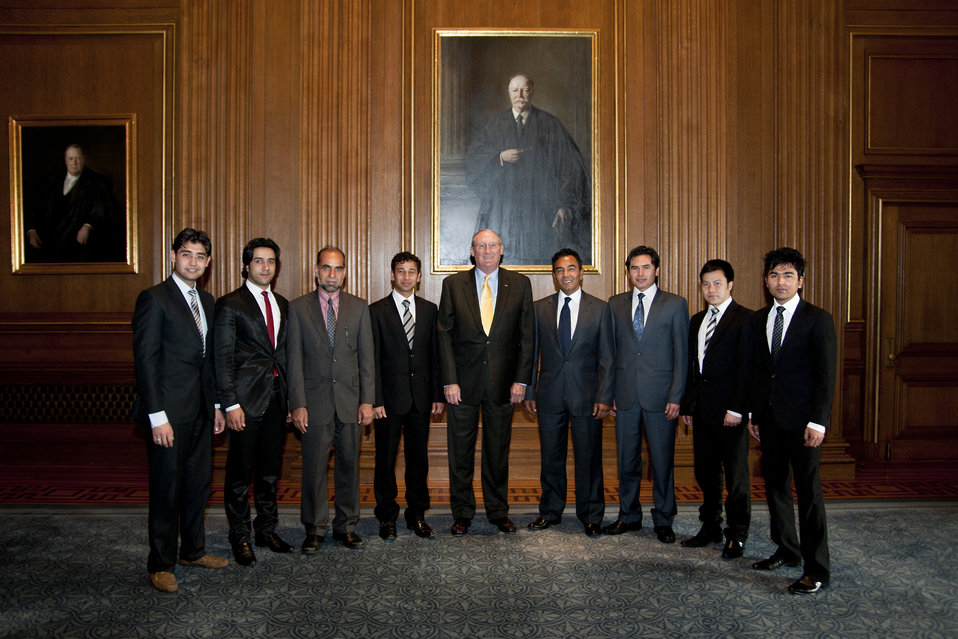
Clerk Suter Meets With 2012 Jessup Moot Court Competitors from Afghanistan

Clerk of Court William Suter meets with USAID-funded 2012 Philip C. Jessup Moot Court Competitors from Afghanistan during their visit to the Supreme Court of the United States in Washington, D.C., on March 29, 2012.